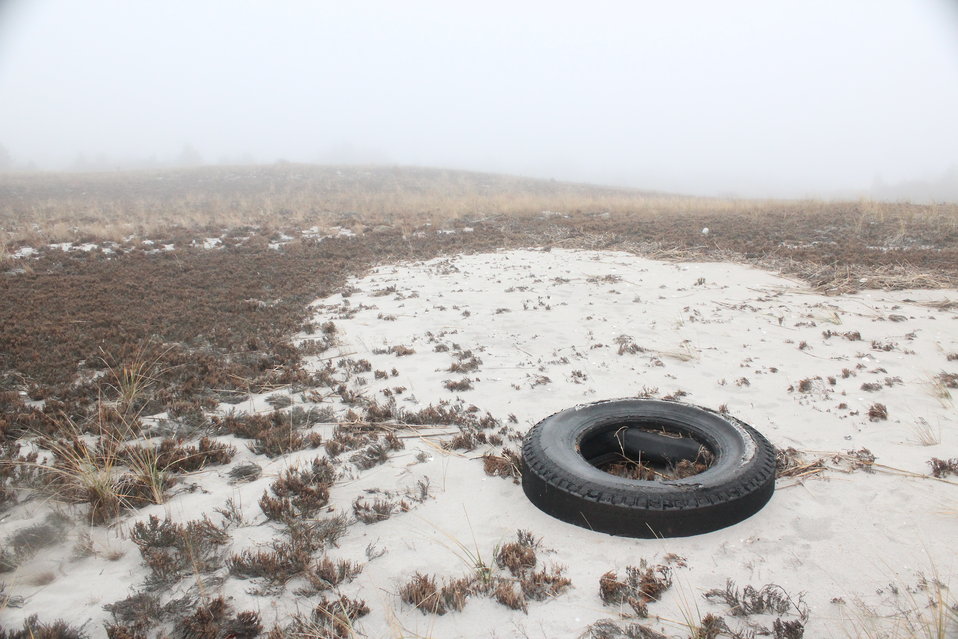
December 4, 2012 Odd resting place

During Hazardous Container surveys, many less hazardous items were found along the way. It was unclear if this tire and other large debris came to rest here due to Sandy or some other way. Photo taken from a search off of Loop Parkway, across from Point Lookout, Long Island, New York.